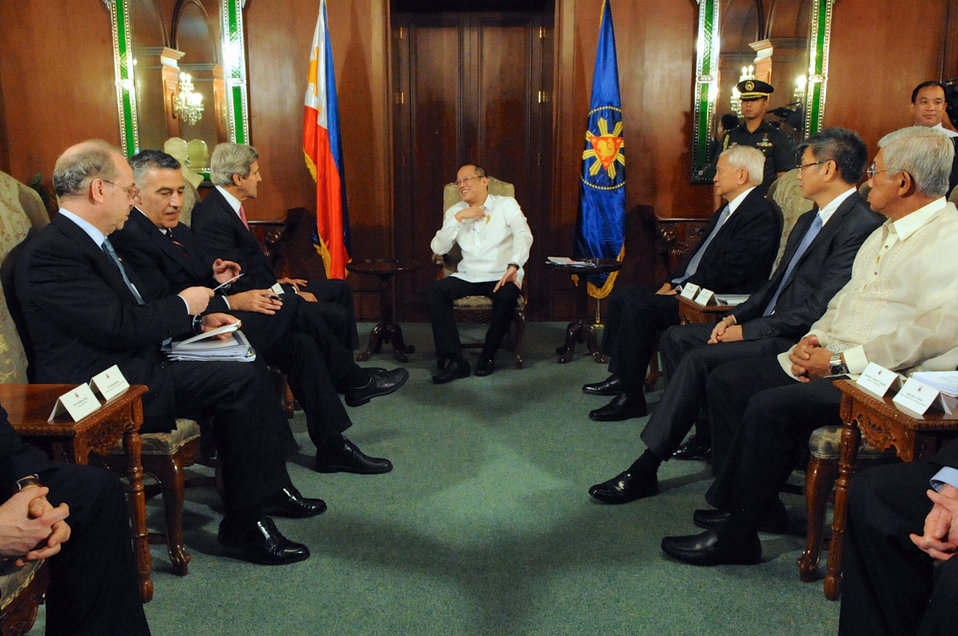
Secretary Kerry Meets With Philippine President Aquino at Malacanang Palace

U.S. Secretary of State John Kerry and President Begnino Aquino of the Philippines sit with their respective delegations before a bilateral meeting and dinner at Malacanang Palace in Manila on December 17, 2013.